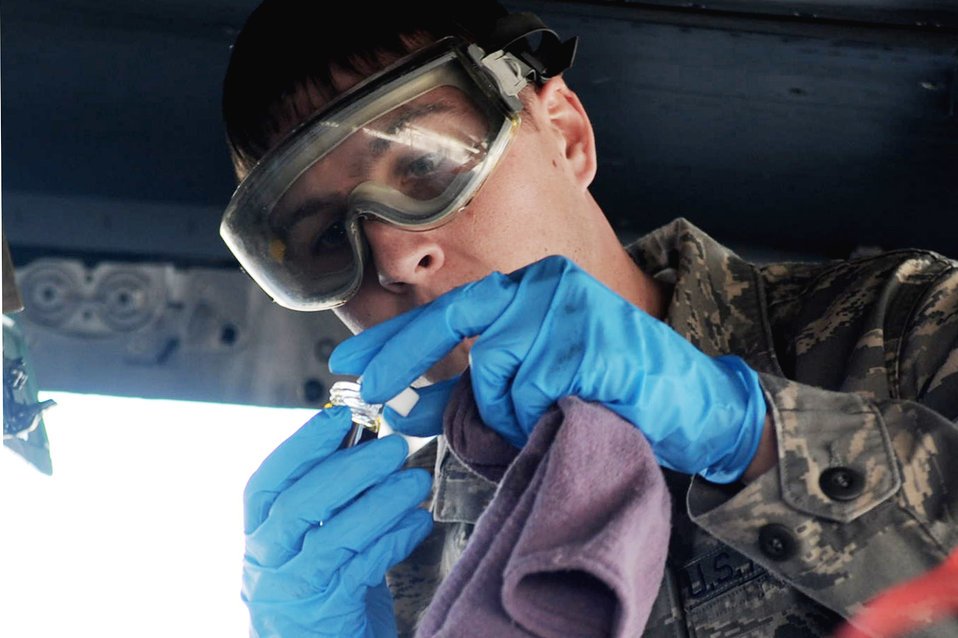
Strike Eagle

Senior Airman Bobby Kerr, a 307th Fighter Squadron crew chief at Seymour Johnson Air Force Base, N.C., checks an oil sample on an F-15E Strike Eagle after a flight March 19, 2010. The 307th FS falls under the 414th Fighter Group, a new Air Force Reserve Command unit standing up on Seymour Johnson AFB to support the growing F-15E Strike Eagle mission.